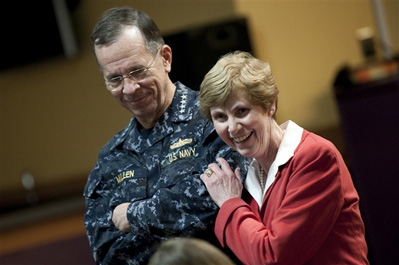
Headline

Description